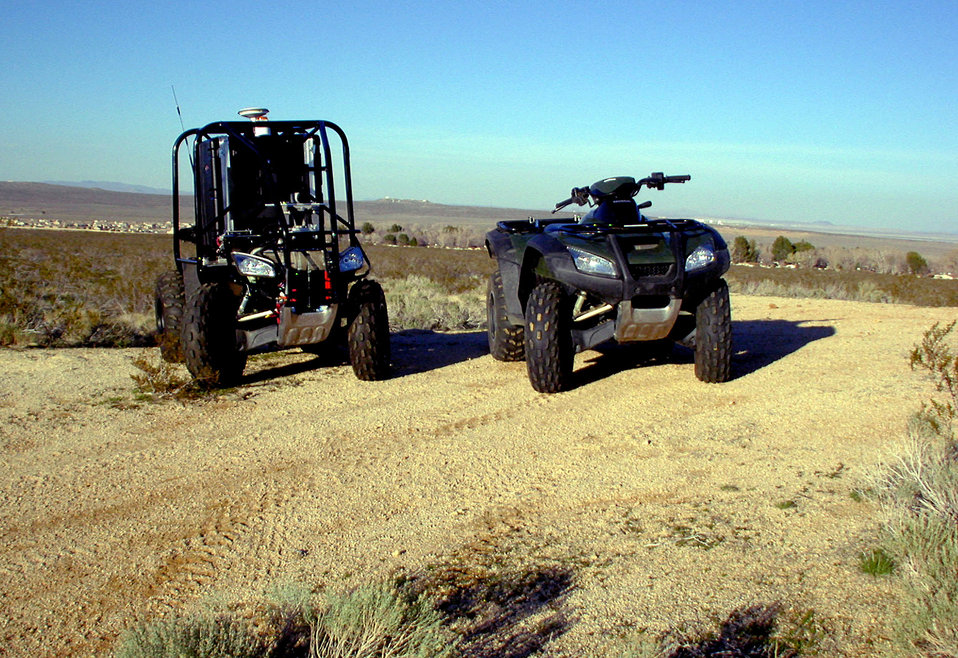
Unmanned ground vehicles

EDWARDS AIR FORCE BASE, Calif. -- The